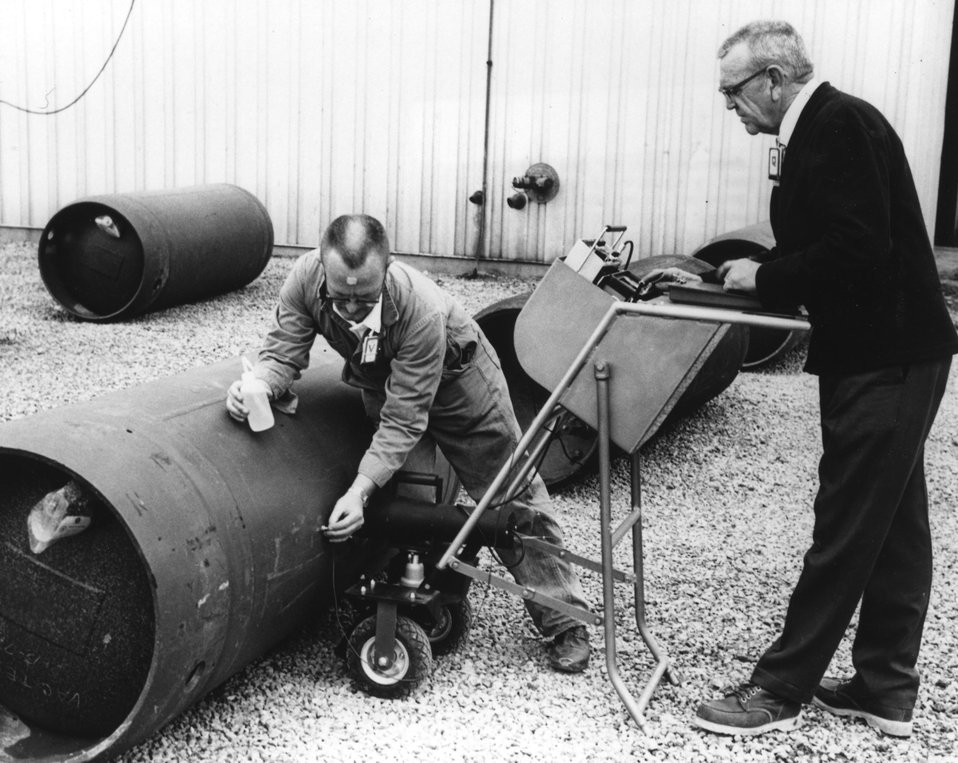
ENRICHMENT METER...Measurement of the uranium enrichment in 2.5-ton cylinders of uranium hexaflouride (UF6) product from the AEC's Oak Ridge and Portsmouth Gaseous Diffusion Plants is done with a portable 'enrichment meter'. c. 1974